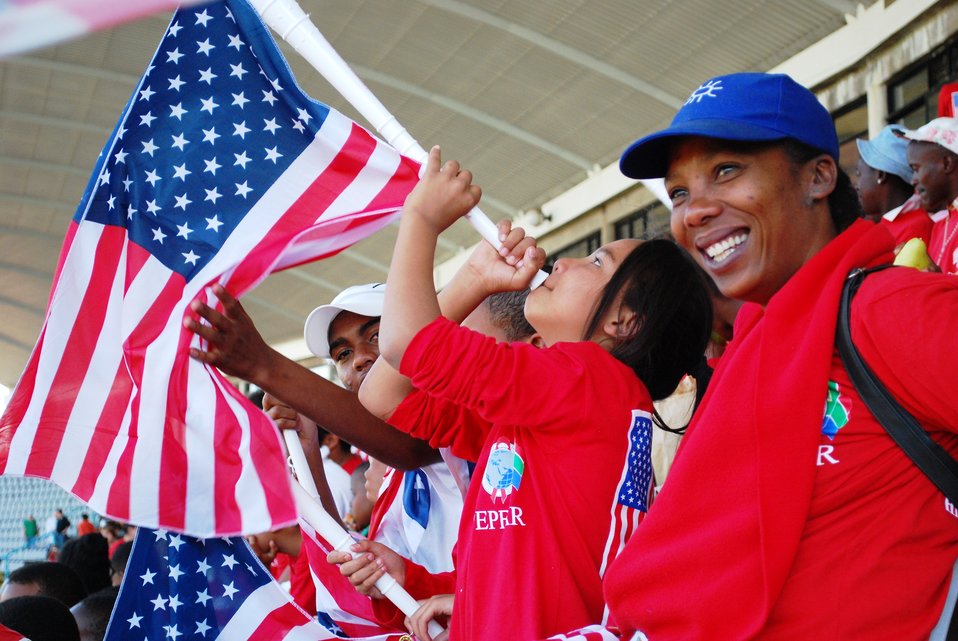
Fans Cheer for U.S. National Soccer Team

South African students and U.S. Mission to South Africa families cheer on the U.S. National Soccer Team at the open practice session at the Pliditch Stadium in Pretoria, South Africa, on June 6, 2010. The U.S. National Soccer Team is preparing for the 2010 World Cup in South Africa.